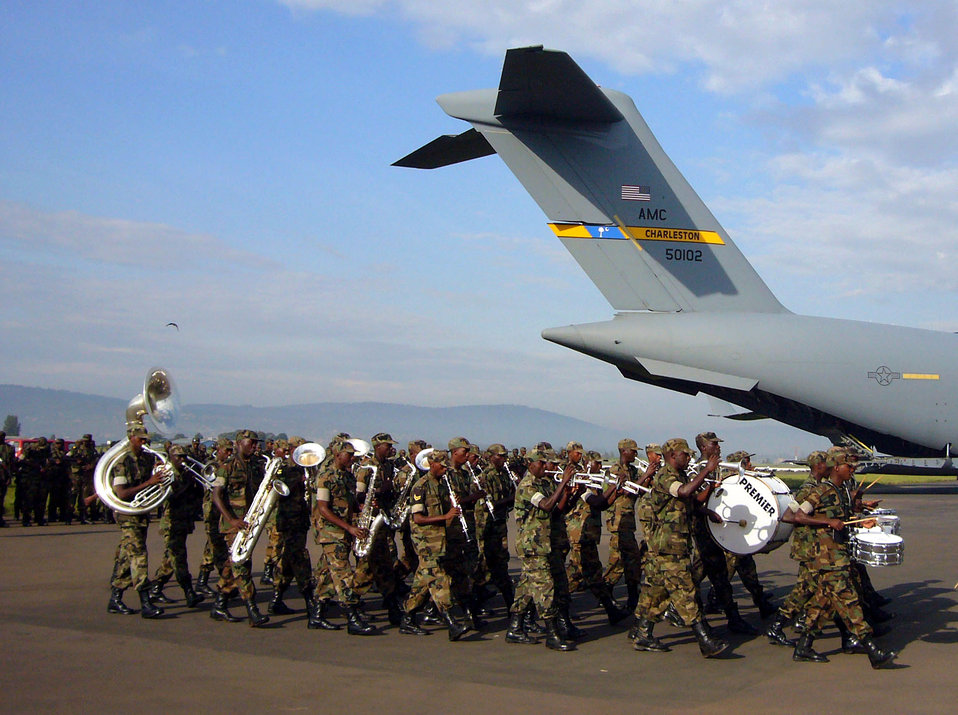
Air Force assists in Darfur troop movement

The Rwandan military band performs for Rwandan soldiers returning home in a C-17 Globemaster III after an eight-month deployment to Darfur Oct. 20 at the Kiglai International Airport, Rwanda. Airmen from Ramstein Air Base, Germany, and Charleston Air Force Base, S.C., are providing airlift support to the African Union effort in Darfur.